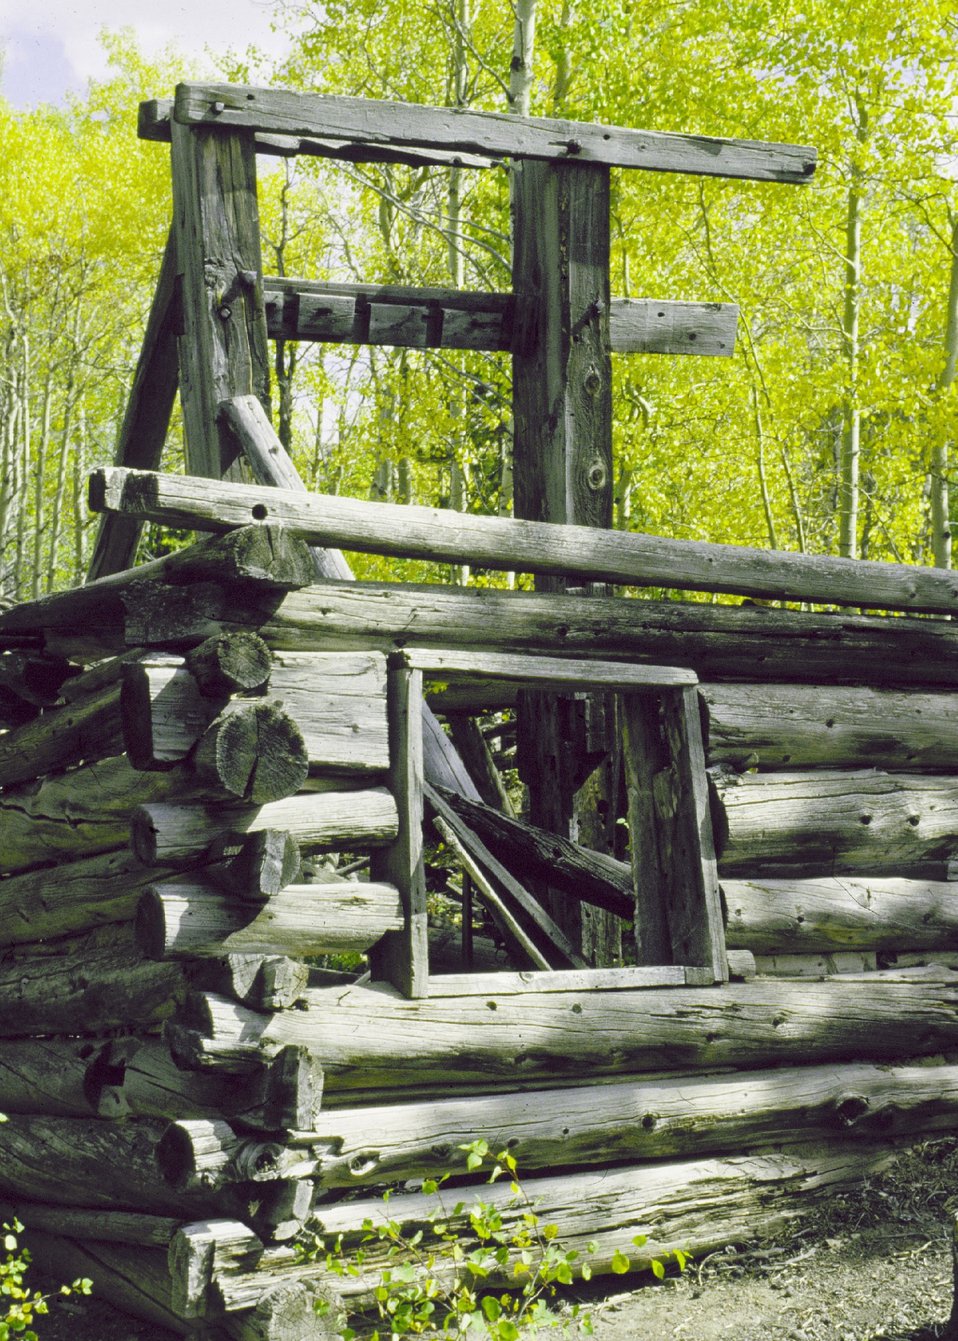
Miner's Delight structure at South Pass, Wyoming.